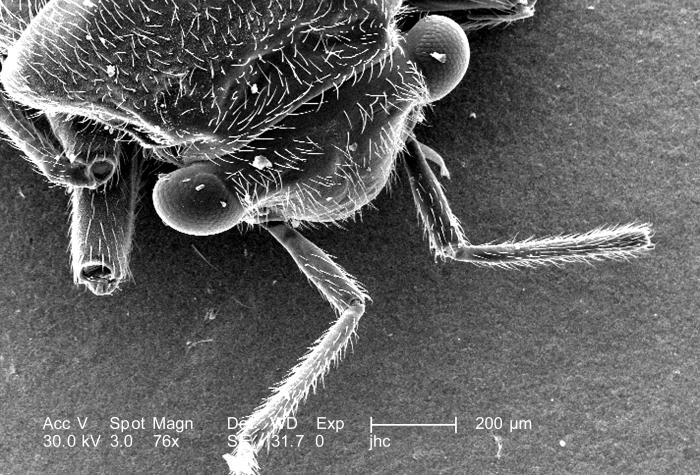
At a low magnification of 76X, this scanning electron micrograph (SEM) showed the head, and some of the thoracic region from a superior view of an unidentified black-colored insect with a small red mark on its dorsum, which was found in the suburbs of Decatur, Georgia. It was a flying insect, and was very small in size, approximately 1/4" in length. According to the donor, it also displayed a red coloration on its back. Some of the exoskeletal body structures included in this view where the insect's eyes, antennae, portions of its legs, and setae, which are hair-like exoskeletal extension that provide the organism with environmental data such as wind speed, tactile stimuli, and temperature changes.